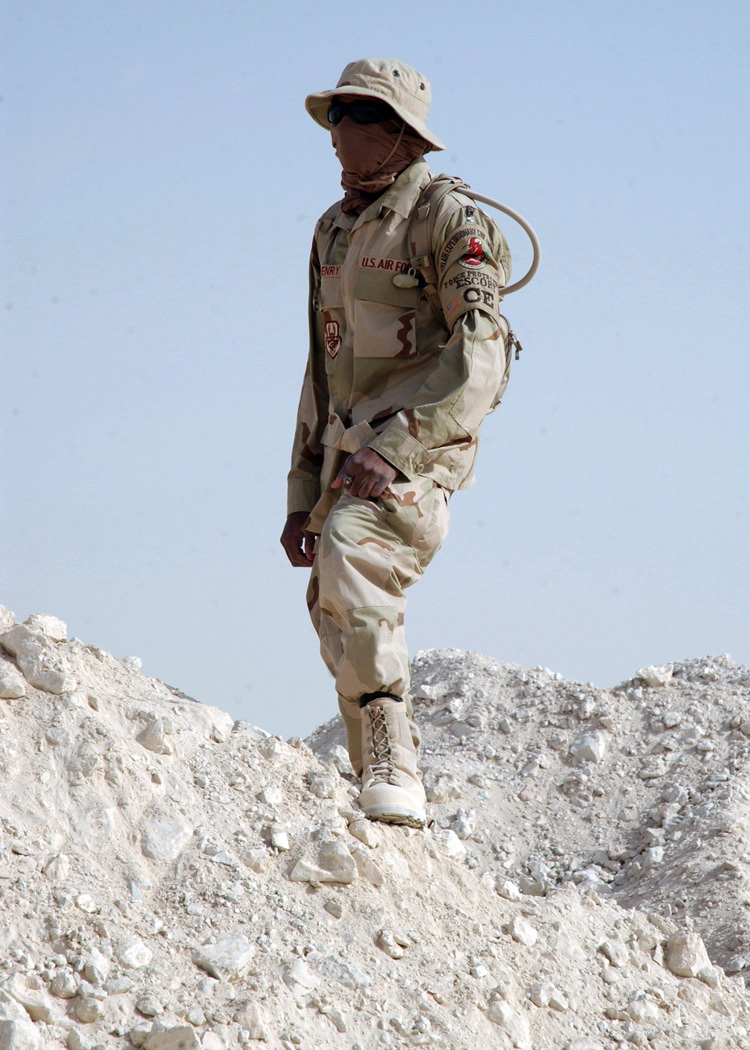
Operation Iraqi Freedom

SOUTHWEST ASIA (AFPN) -- Airman 1st Class Christopher Henry watches third country national contractors build a new structure at a deployed location on Jan. 22. Airman Henry is a third country national escort with the 379th Expeditionary Civil Engineer Squadron, deployed from Langley Air Force Base, Va.